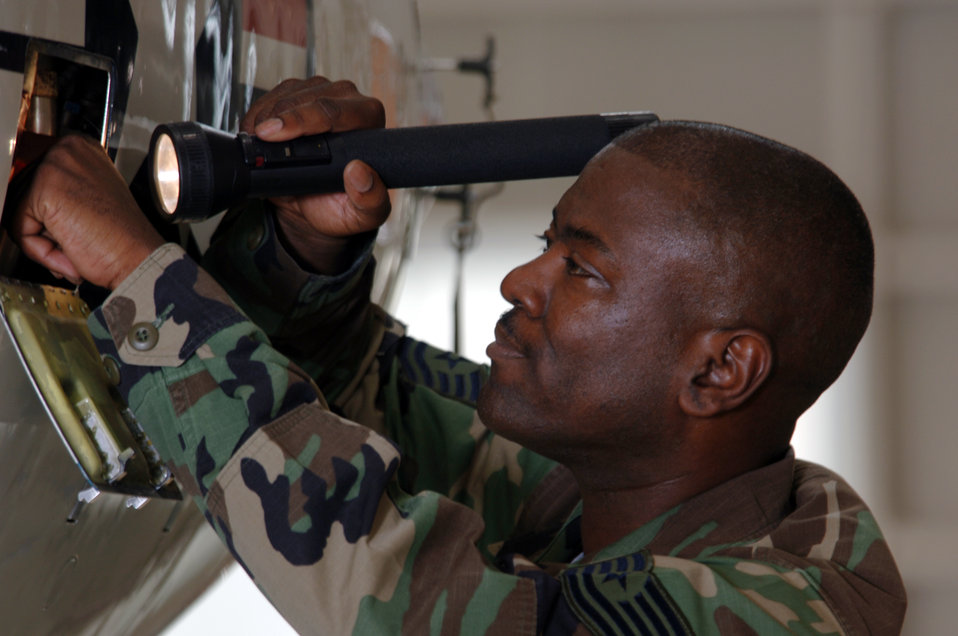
Quality check

YOKOTA AIR BASE, Japan -- Tech. Sgt. Eric Wilson conducts a quality assurance inspection on a C-21 aircraft. Sergeant Wilson is assigned to the 374th Maintenance Operations Squadron.